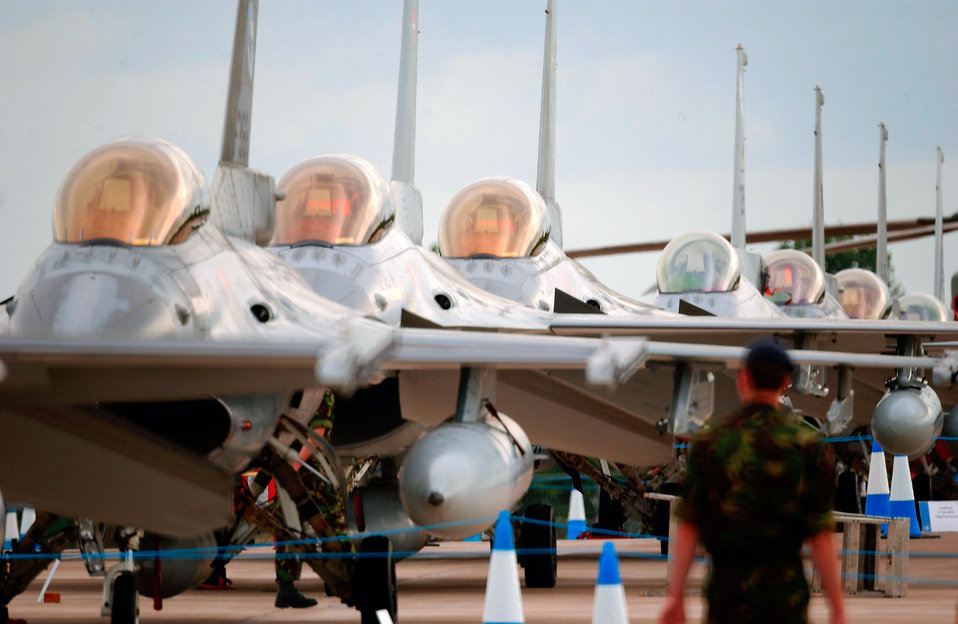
Fighting Falcons

ROYAL AIR FORCE MILDENHALL, England -- A group of F-16 Fighting Falcons are lined up in a static display at this year's Royal International Air Tattoo July 21 here. The air show is the largest military air show in the world. It features more than eight countries' air forces and armies.